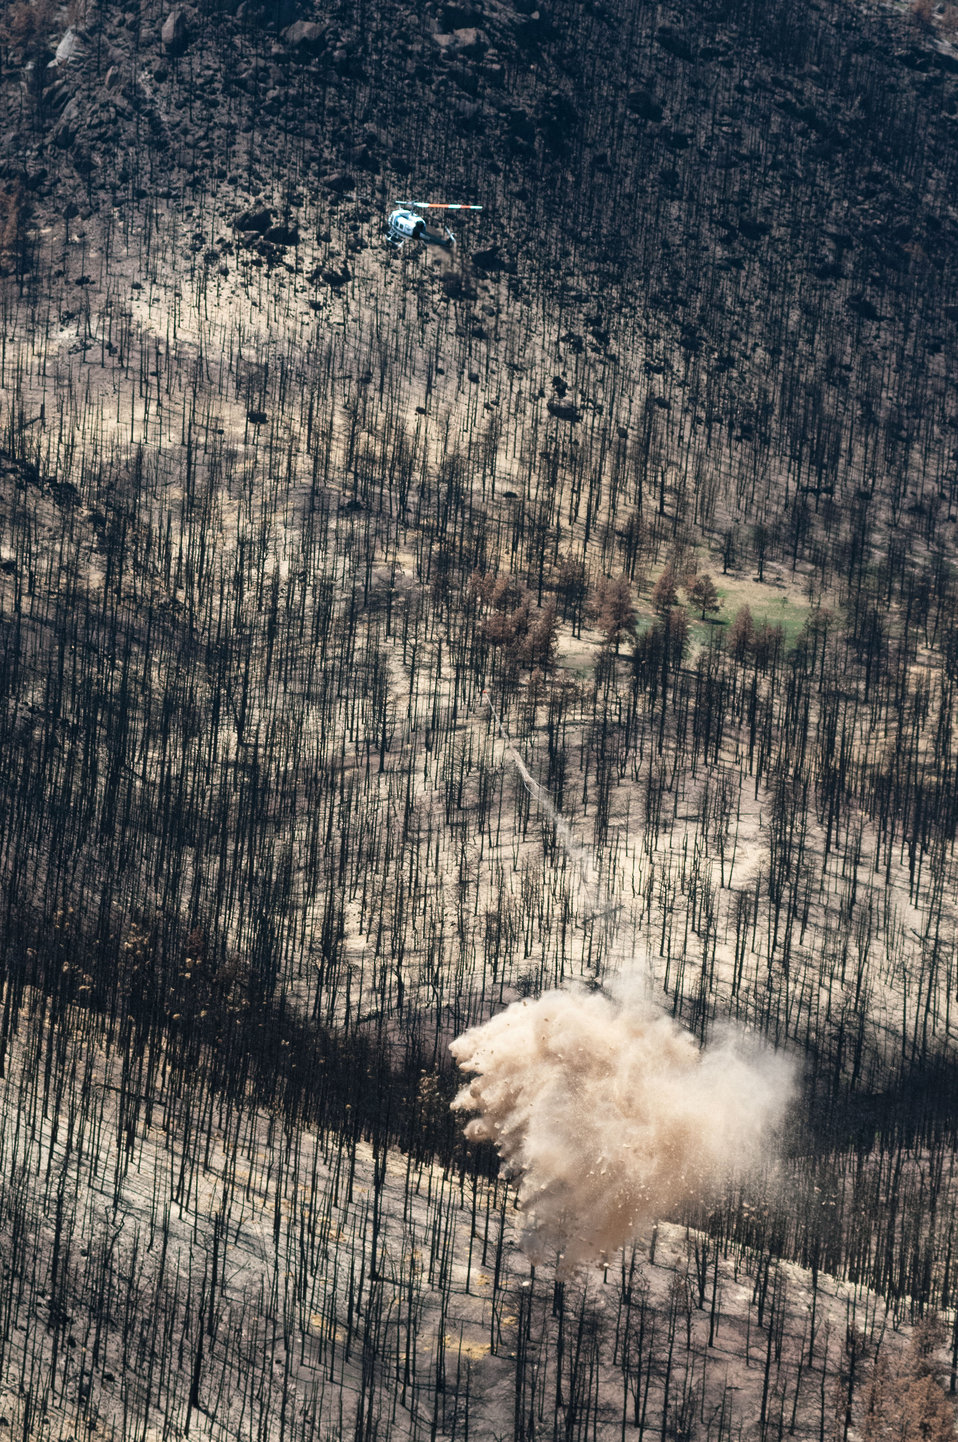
Mountain West Helicopter pilot Thierry Richards, releases one ton of straw from his Bell UH-1H helicopter on to a burned out area of the Poudre Canyon mountainside near Fort Collins, Colo., on Friday, July 20, 2012. This is an aerial application of straw will mitigate soil and ash runoff from the mountainous terrain leading to Seaman Reservoir, drinking water resource for the City of Greeley. Forest Service lands receive straw, while private and other lands receive a seed mix and straw to promote ground cover plant growth on ash-covered lands. In total, 1,800 tons of straw will be applied during the 14-day operation. One quarter of the cost was paid by the City of Greeley and the U.S. Department of Agriculture funded the remainder. The Hewlett Gulch Fire was started by a camper’s alcohol stove, on May 14, at the saddle of a picturesque mountain ridge along the Hewlett Gulch Trail of Poudre Canyon, in the Roosevelt National Forest, 60 miles north of Denver. At it’s peak more than 400 firefighters were battling fires being pushed by 50 mph winds that helped blacken over 12-square-miles of dry ground cover, brush and trees. Many of the trees were already dead and tinder dry from beetle-kill. Their efforts have successfully kept water in the reservoir clean and clear, while downstream water flow has gone from famous Colorado clear water to nearly black flows of water heavily laden with ash, silt, and burnt debris that recent thunderstorms have already washed down from the mountainsides.